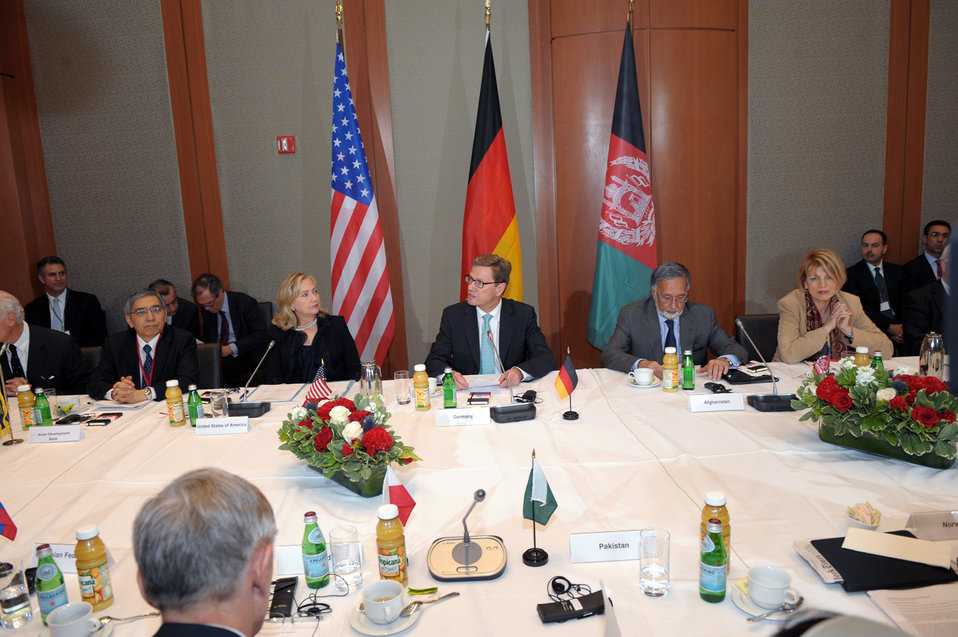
Secretary Clinton and Afghan Foreign Minister Rassoul Co-Chair the New Silk Road Ministerial Meeting

U.S. Secretary of State Hillary Rodham Clinton, center, and Afghan Foreign Minister Rassoul, left, co-chair the New Silk Road Ministerial Meeting hosted by German Foreign Minister Westerwelle, right, at the German House in New York, New York, on September 22, 2011.